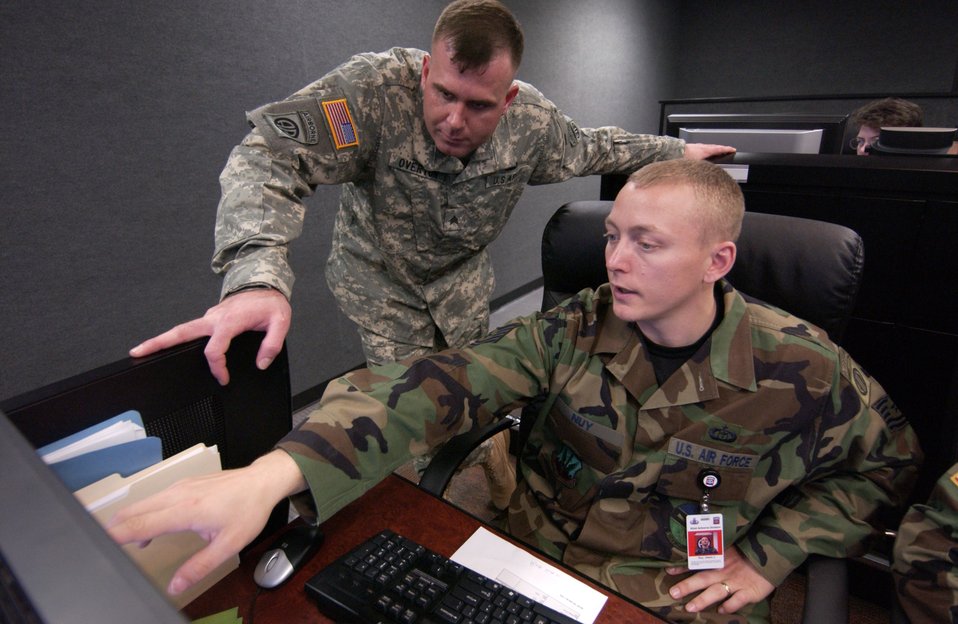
Joint forcible entry exercise

POPE AIR FORCE BASE, N.C. (AFPN) -- Tech. Sgt. Jason Nuy shows weather conditions over the local area to Army Sgt. Steven Overton at the joint operations center during a joint forcible entry exercise Jan. 25. Sergeant Nuy is assigned to the 18th Weather Squadron and Sergeant Overton is with the 82nd Airborne Division.